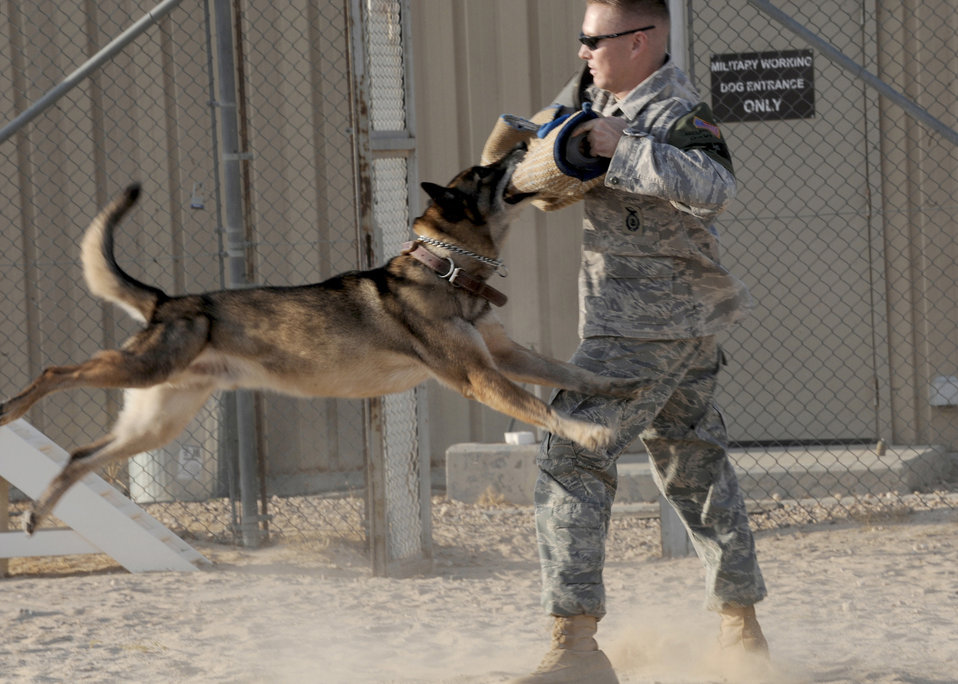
Military Working Dogs

Gabe, a 12-year-old Belgian Malinois military working dog, takes a bite out of Tech. Sgt. Nathan Nash's padded sleeve during an attack demonstration July 27, 2010, in Southwest Asia.